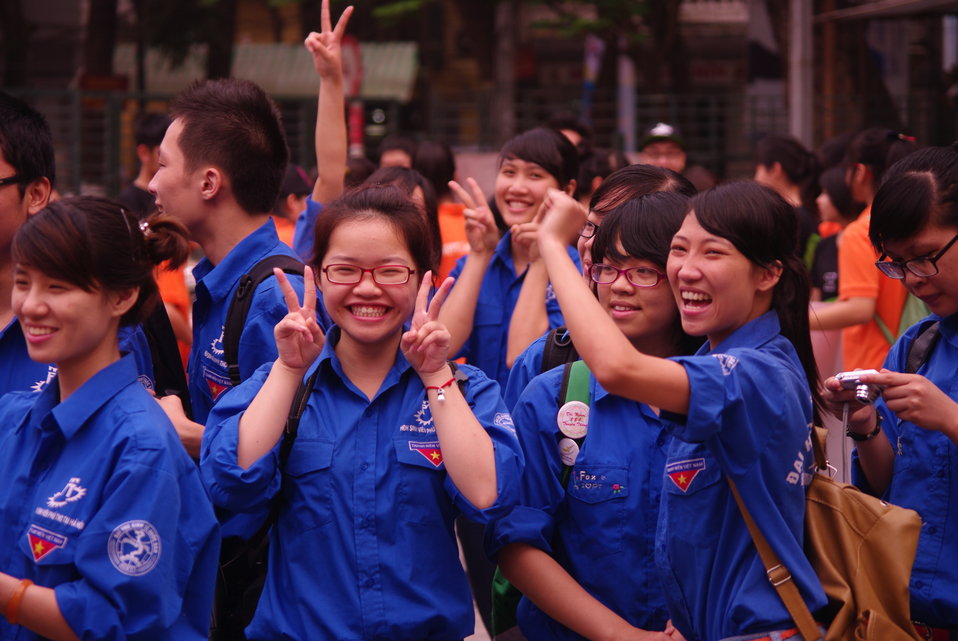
Youth Union Members at the World TB Day Event in Hanoi

March 23, 2013